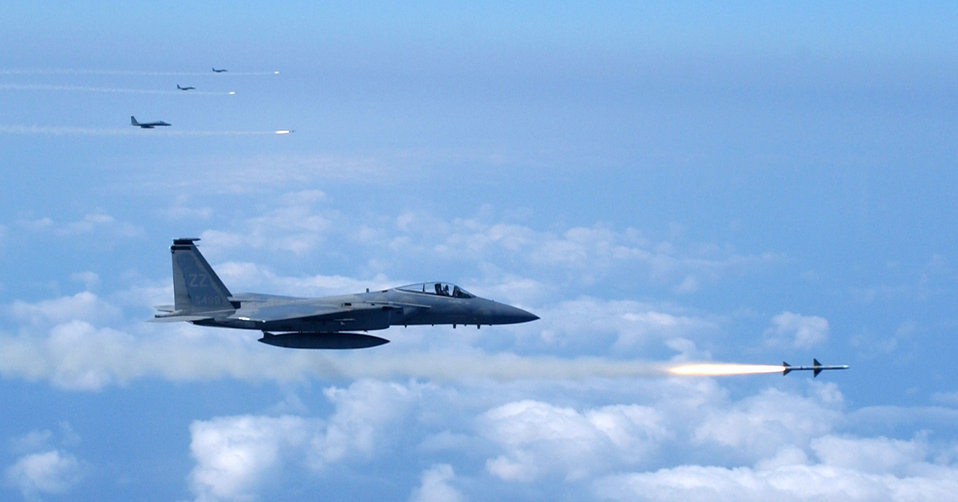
Fox Fox!

A formation of F-15 Eagles target and fire on a decoy as part of a joint service training exercise Wednesday, Feb. 22, 2006. The three-day exercise, conducted near Okinawa, Japan, tests the capabilities of the 18th Wing and Pacific Command's assets.